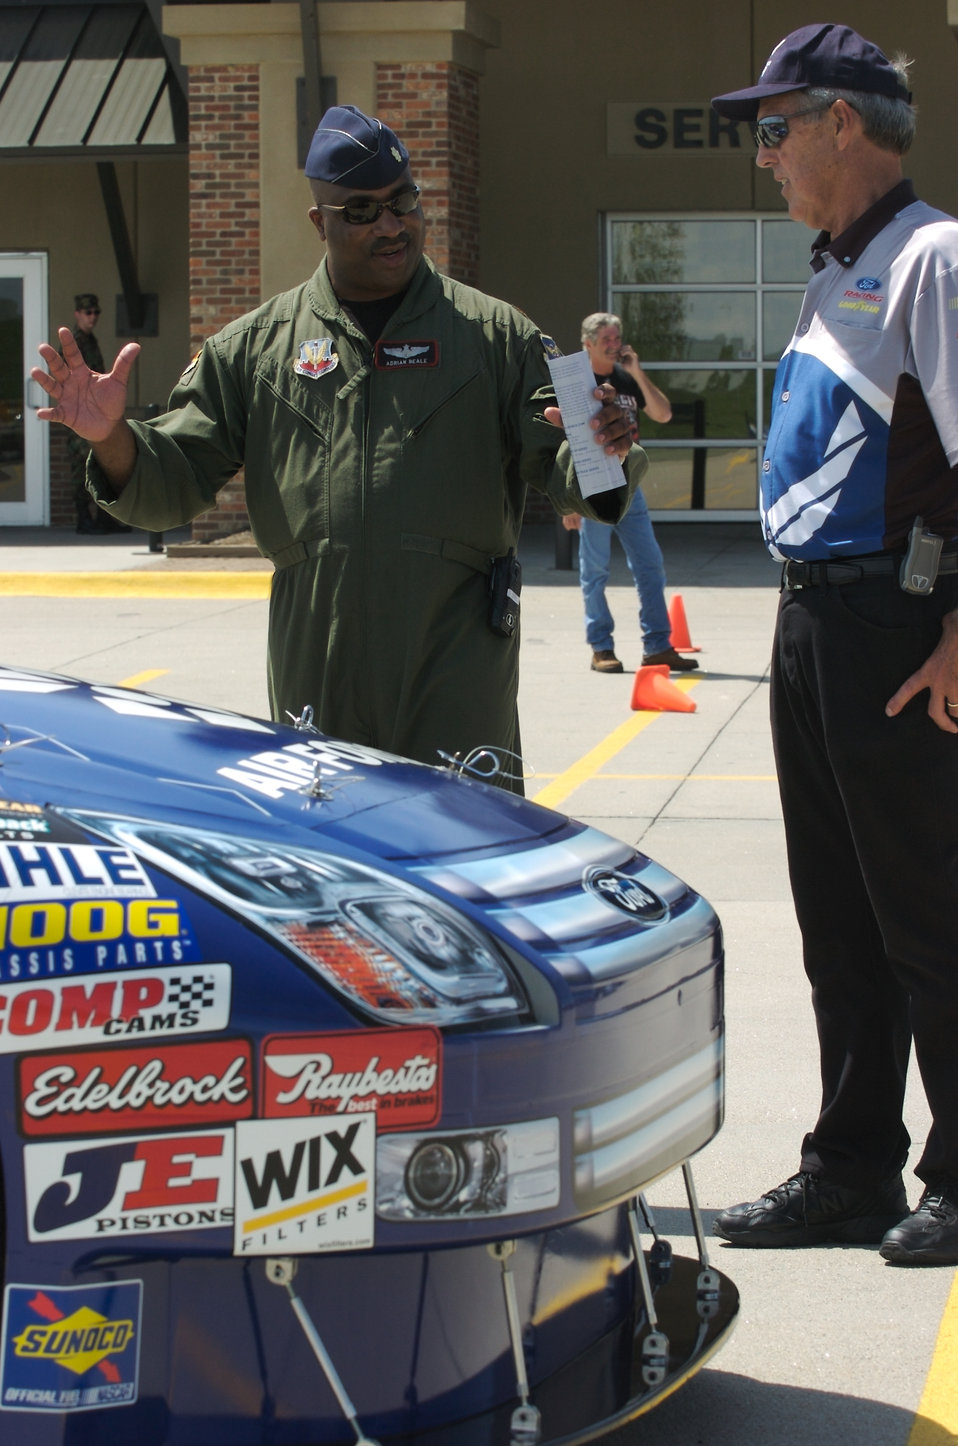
Hog wild

Maj. Adrian Beale (left) talks to Ron Mullins about the Brothers No. 21 Air Force Ford Fusion on display at the Dillon Brothers Harley-Davidson for Air Force Week in the Heartland Aug. 14 in Omaha, Neb. Mr. Mullins is the show car operator for the Wood Brothers. He works with recruiters to show the car to the public 10 months out of the year. The Air Force car and the Air Force Orange County Chopper were on display together. Major Beale is with the 55th Wing at Offutt Air Force Base, Neb.